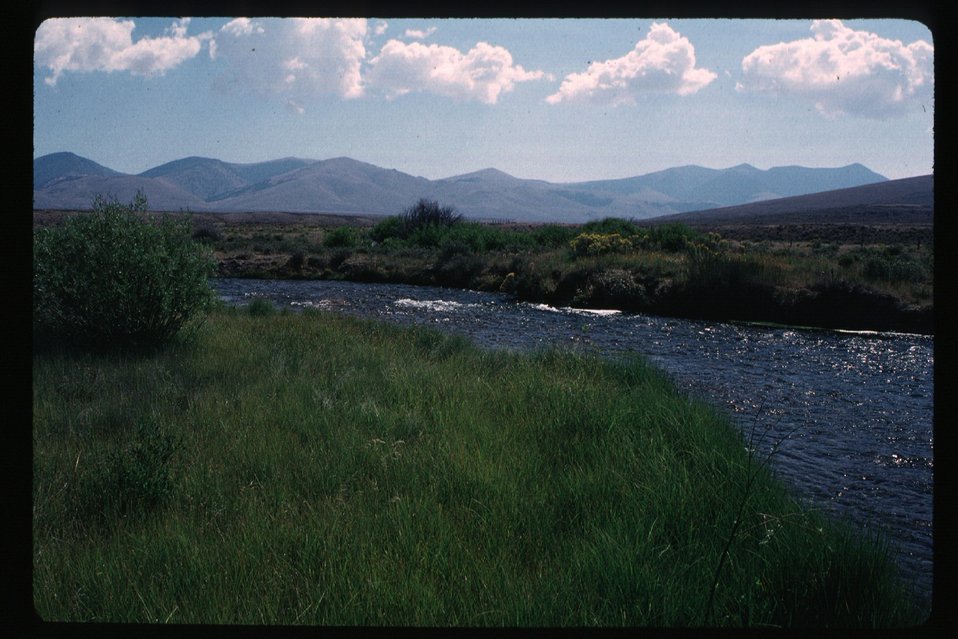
Riparian area Birch Creek Idaho Falls Field Office USRD Upper Snake River District